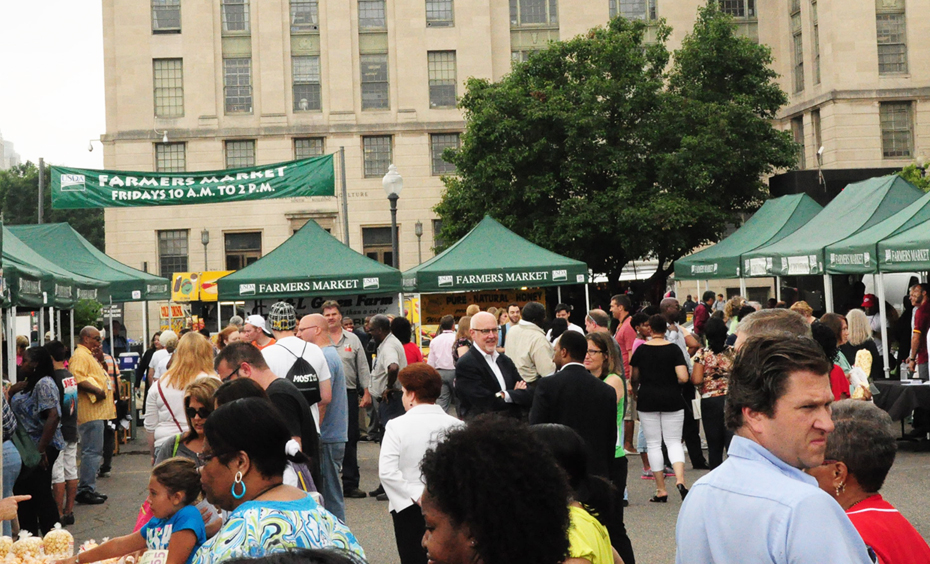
Foot-Traffic-2---web

Local residents and tourists come to the U.S. Department of Agriculture (USDA) Farmers Market at 12th and Independence Ave. SW, Washington, D.C. on June 8, 2012. The market is a popular destination for local residents and visitors of the National Mall.